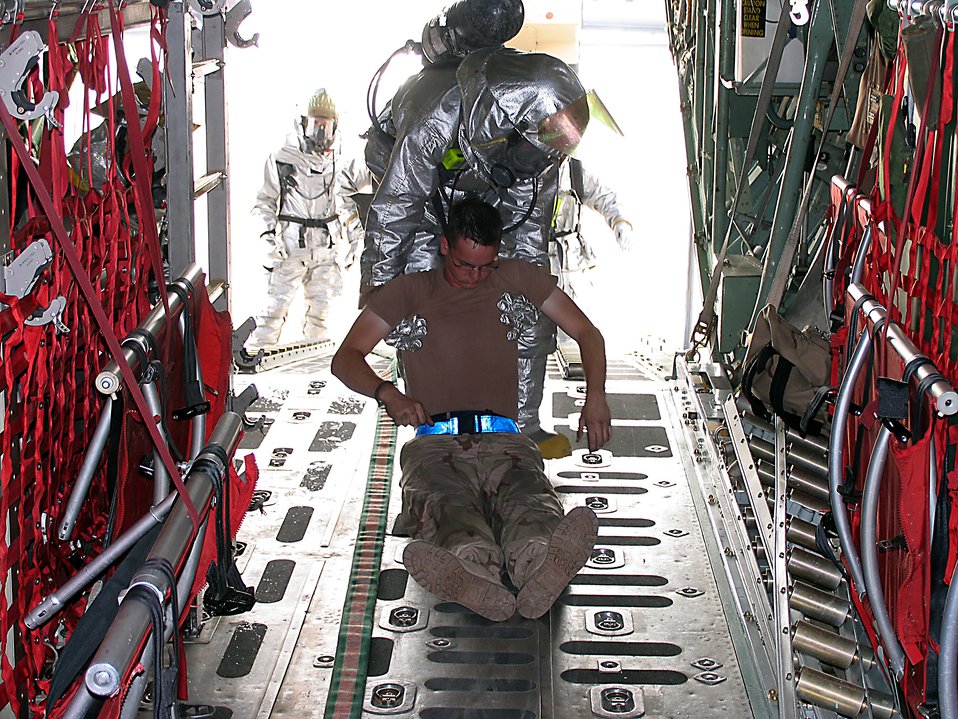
Firemen ready

SOUTHWEST ASIA (AFPN) -- Staff Sgt. William Young pulls a